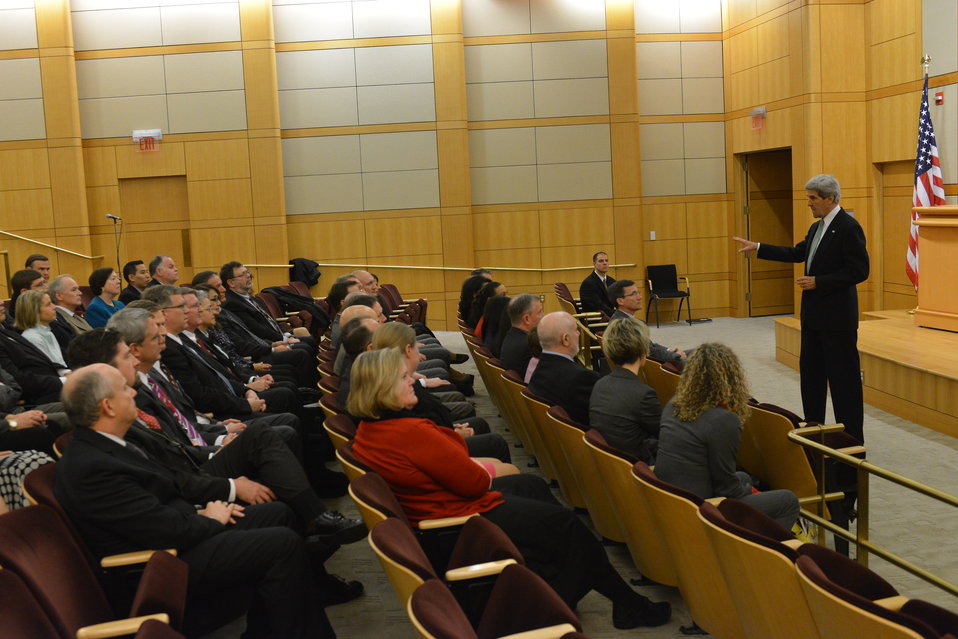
Secretary Kerry Gives Remarks at the Foreign Policy Advisor Conference

U.S. Secretary of State John Kerry gives remarks at the Foreign Policy Advisor Conference at the U.S. Department of State in Washington, D.C., on March 14, 2013.